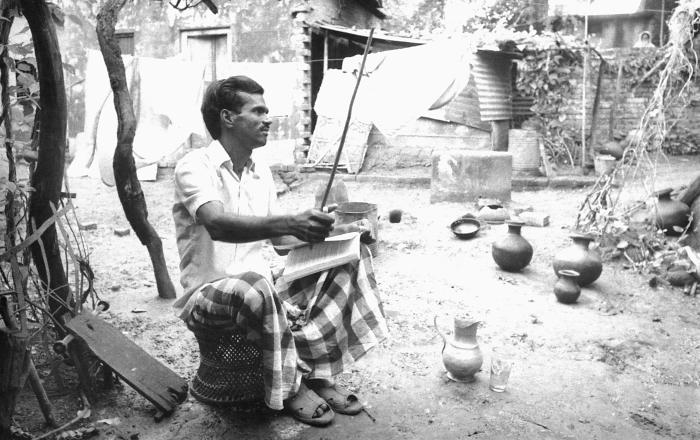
This man was standing guard at the entrance to a home in which was found a smallpox case. His job was to keep those infected with the virus inside the house, and to see that those asymptomatic individuals living in the house, or any non-resident contacts were immediately vaccinated. This image was part of a series provided by Dr. Stan Foster, and captured by Pierre Claquin, M.D., B.A.C., who at the time was a member of the World Health Organization's Smallpox Eradication Program. It was part of a series photographed by former E.I.S. officer, Stanley O. Foster M.D., M.P.H., and was one of a series entitled 'The Story of One Smallpox Jeep', which depicted the travails faced by the jeep, and its occupants of public health practitioners, as they road through the Bangladesh countryside in an attempt to eradicate smallpox from the country.